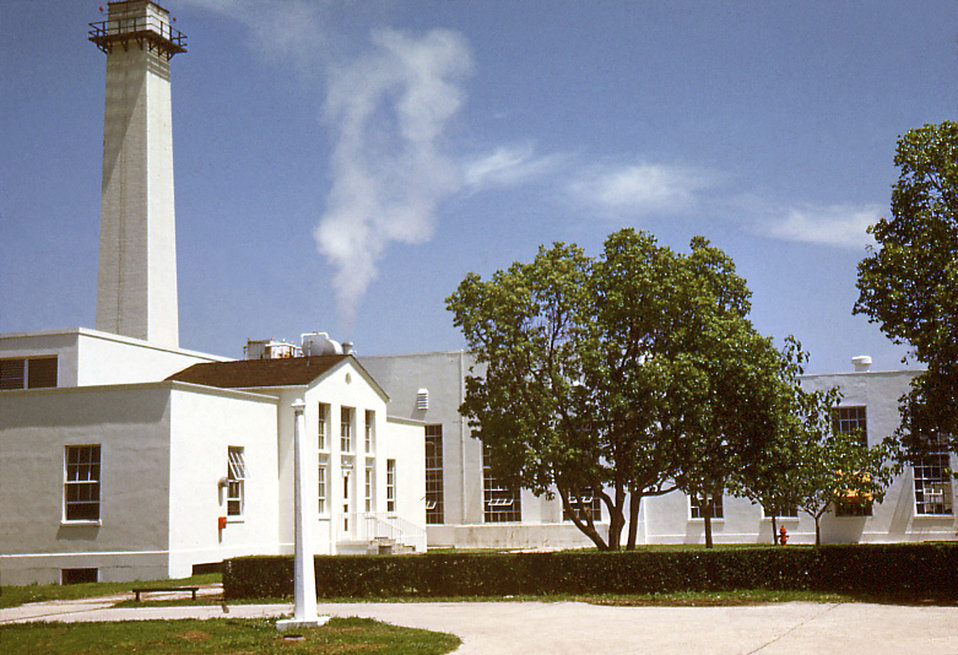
This historic image depicted the laundry and power plant building located on the Carville Leprosarium's grounds. This power plant supplied the entire leprosarium compound with its electricity, and the laundry serviced the entire "colony" with its washing needs. The hospital was a self-contained compound with its own storehouse, patient treatment centers, which included a dental office, food-processing facilities, i.e., a cafeteria, and its own cemetery.The National Hansen's Disease Museum's (NHDM) mission is to collect, preserve and interpret the medical and cultural artifacts of the Carville Historic District. In addition, we want to promote the understanding, identification, and treatment of Hansen's Disease (leprosy). We fulfill this mission by creating and maintaining museum displays, traveling exhibits, publications and a website in order to educate and inform the public on all levels.